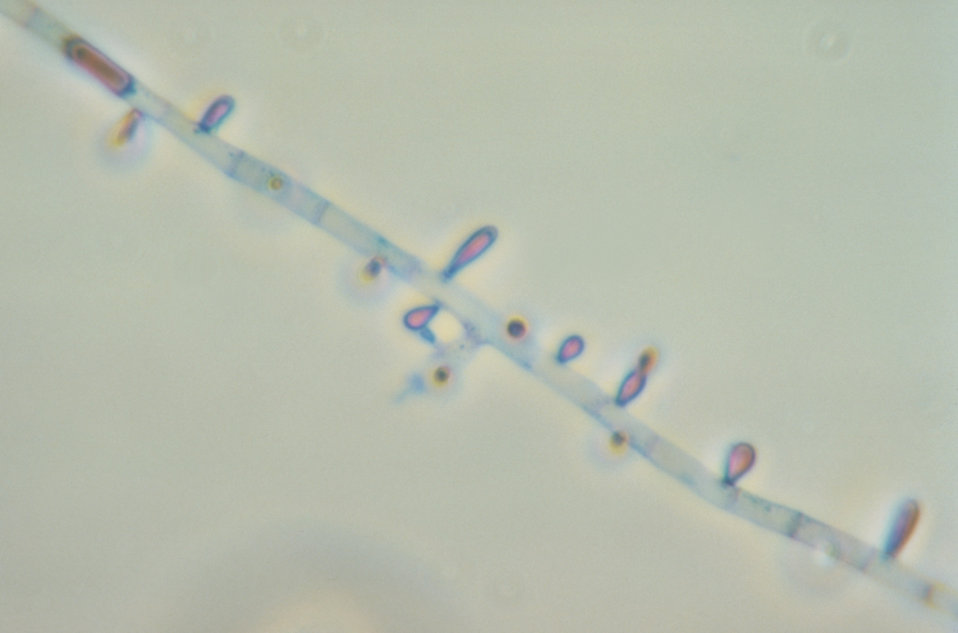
This photomicrograph reveals the microconidia of the fungus Trichophyton rubrum.